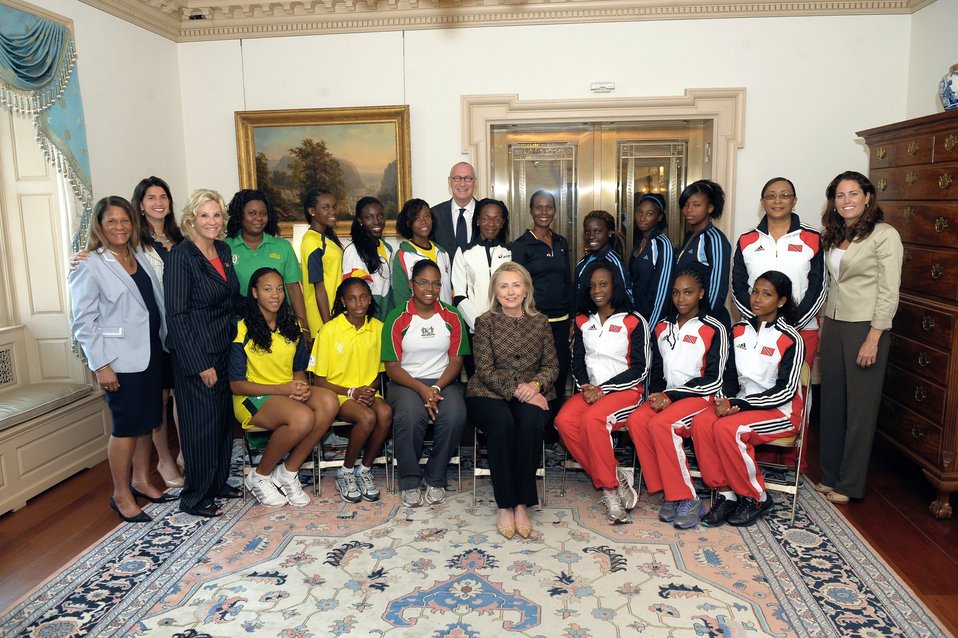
Secretary Clinton and ESPN President Skipper With Athletes From the Caribbean

U.S. Secretary of State Hillary Rodham Clinton and ESPN President John Skipper welcome track and field visitors from the Caribbean to the U.S. Department of State in Washington, D.C., on June 21, 2012.